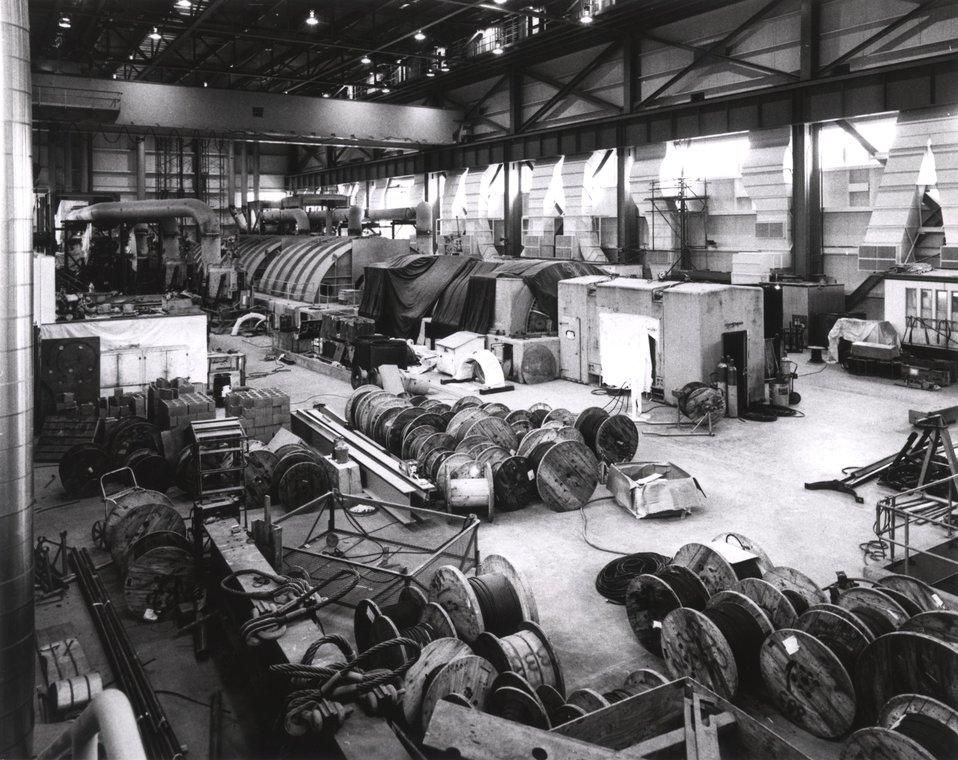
A typical scene during construction of the turbine generator room at Portland General Electric's Trojan Nuclear Power Plant. Circa 1974.